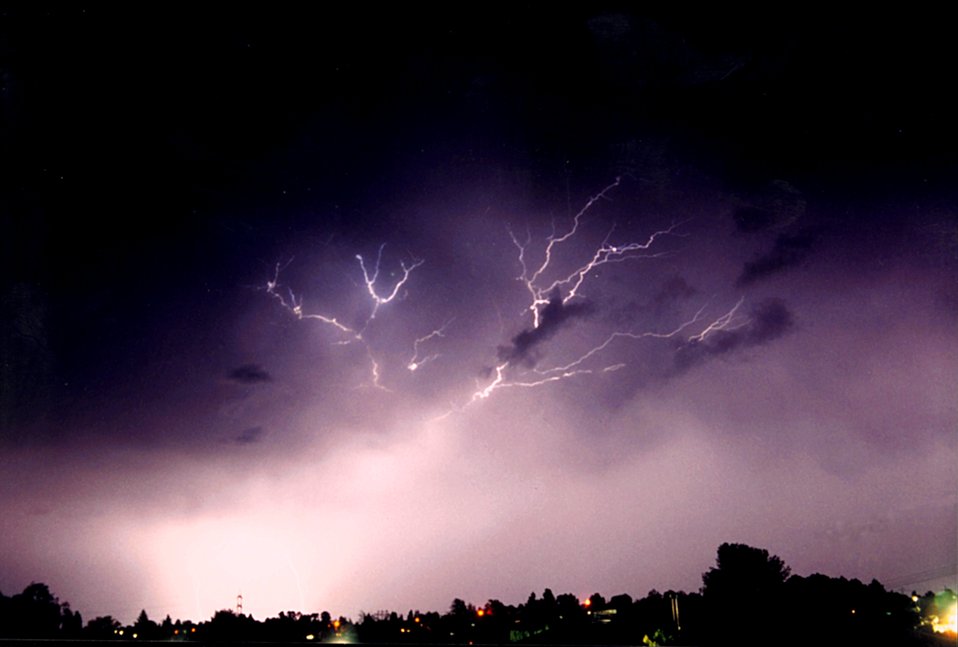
Many of Mr. Lear's lightning photographs are taken from the roof of his home. He has an array of six cameras that can be activated simultaneously in order to capture lightning images. These six cameras span the horizon. Mr. Lear is a welder by trade and has taken lightning photographs for many years as a hobby.